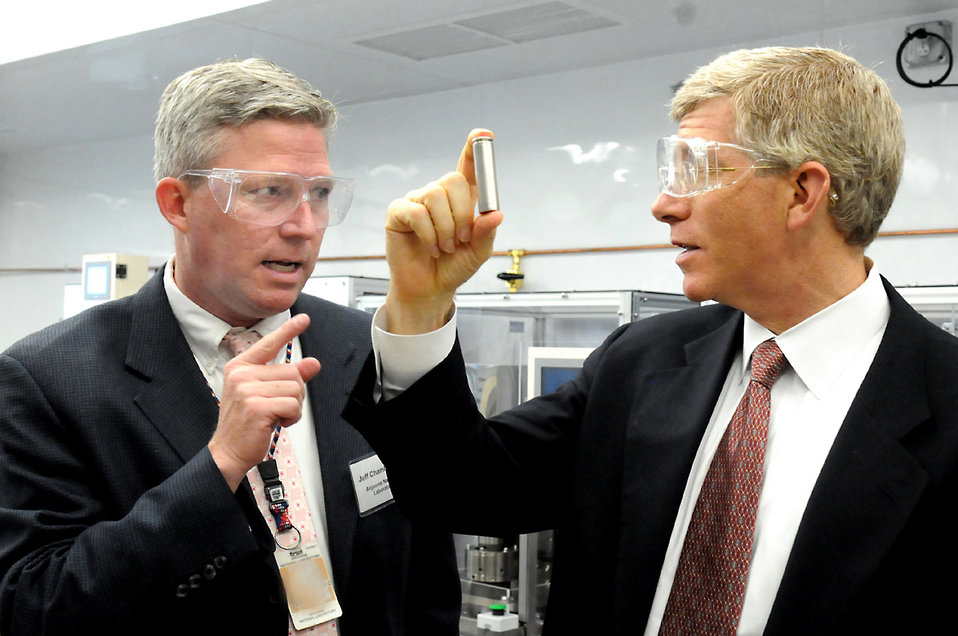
Deputy Secretary Poneman checks out a battery prototype

Argonne's Jeff Chamberlain speaks with Deputy Secretary of Energy Daniel Poneman on our robust energy storage program.